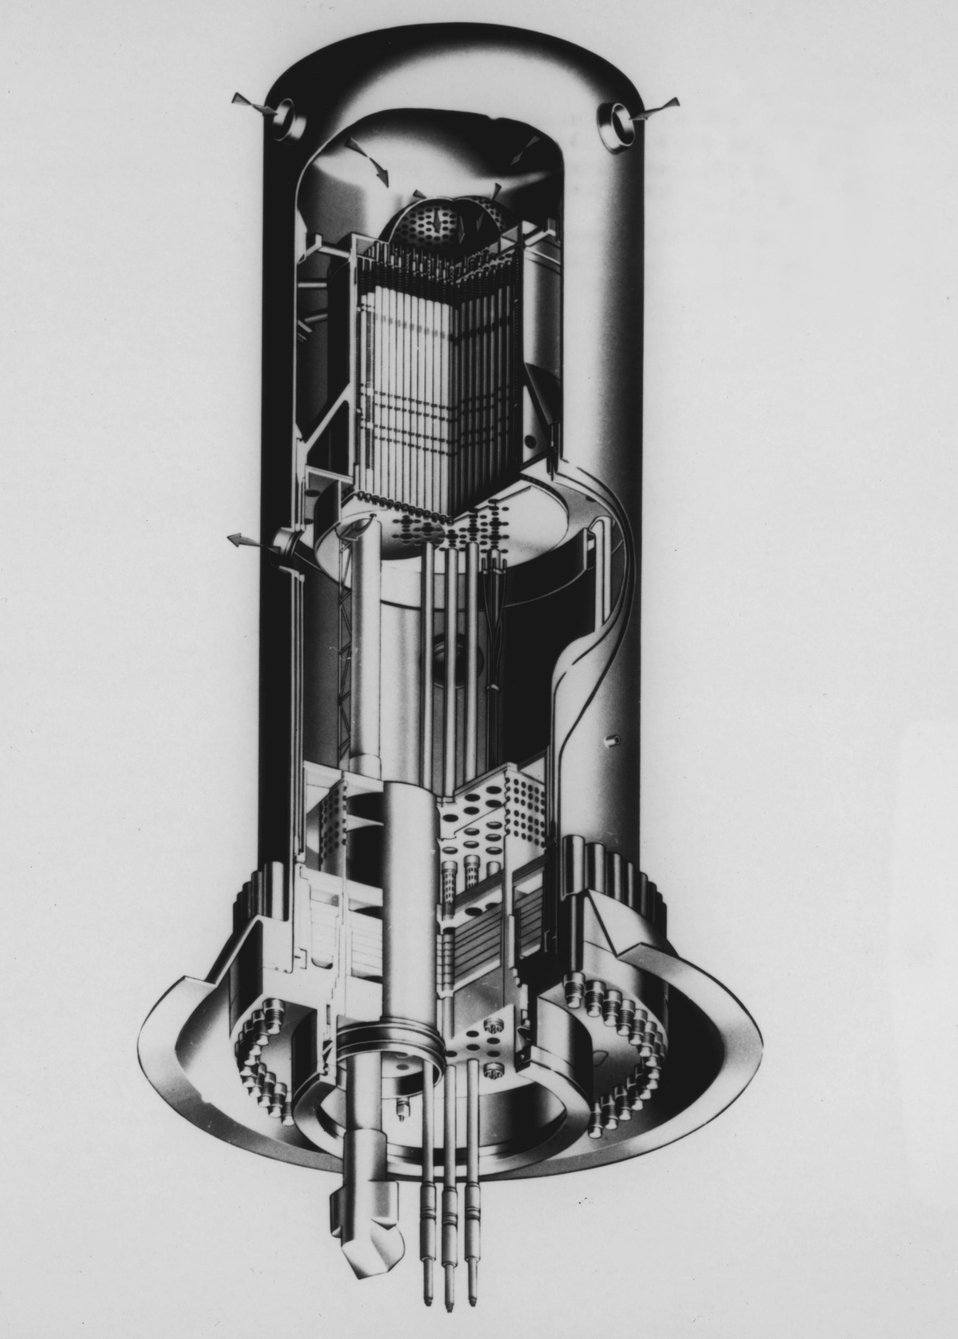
Artist's conception of interior of the Liquid Metal Fast Breeder Reactor. The LMFBR Demonstration Plant will be located near Oak Ridge, Tennessee. c. 1974